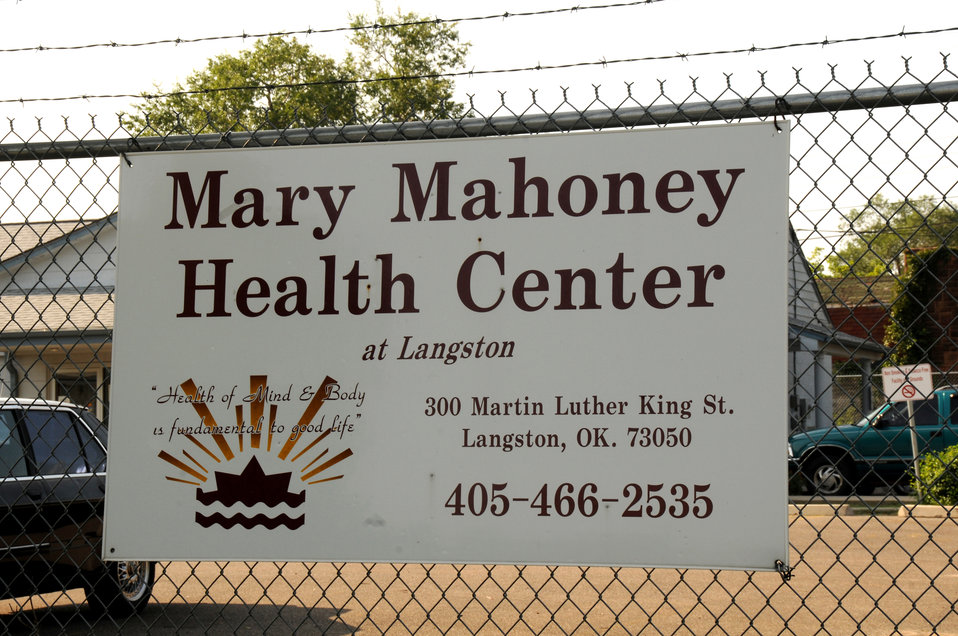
The Mary Mahoney Health Center located in Langston, Oklahoma on August 14, 2009. The clinic received loans through the American Recovery and Reinvestment Act (ARRA) provided to the U.S. Department of Agriculture (USDA) Rural Development (RD) Community Facilities Direct and Guaranteed Loans program. The loans are helping the clinic to expand its facilities and provided better health care to the local community.